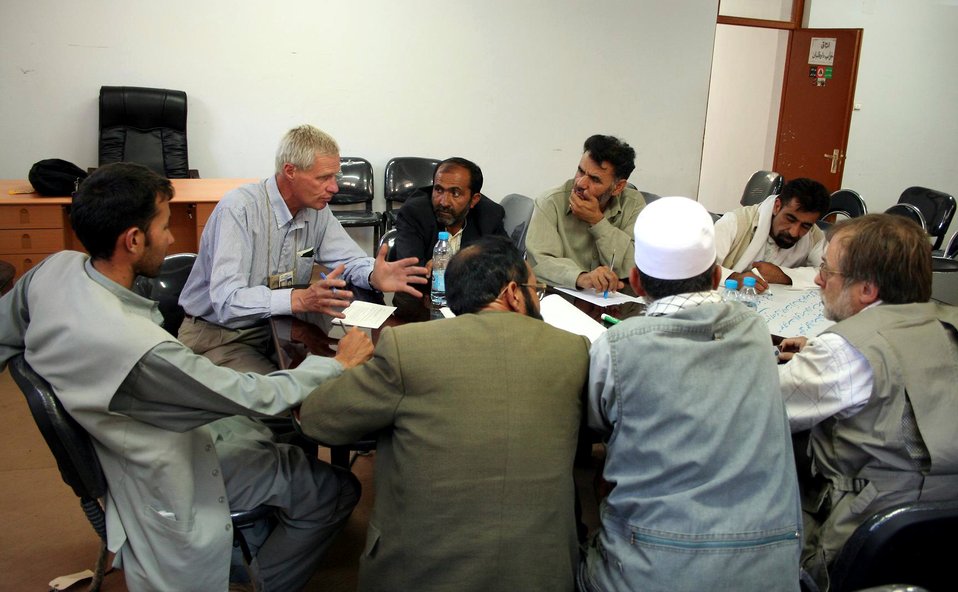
Agriculture day in Afghan province brings hope

Dr. Mike Gangwer, the U.S. Department of Agriculture representative for the Panjshir Provincial Reconstruction Team, meets with non-government organizations and government officials on Tuesday, June 13, to discuss the future of agriculture in the Panjshir Province.